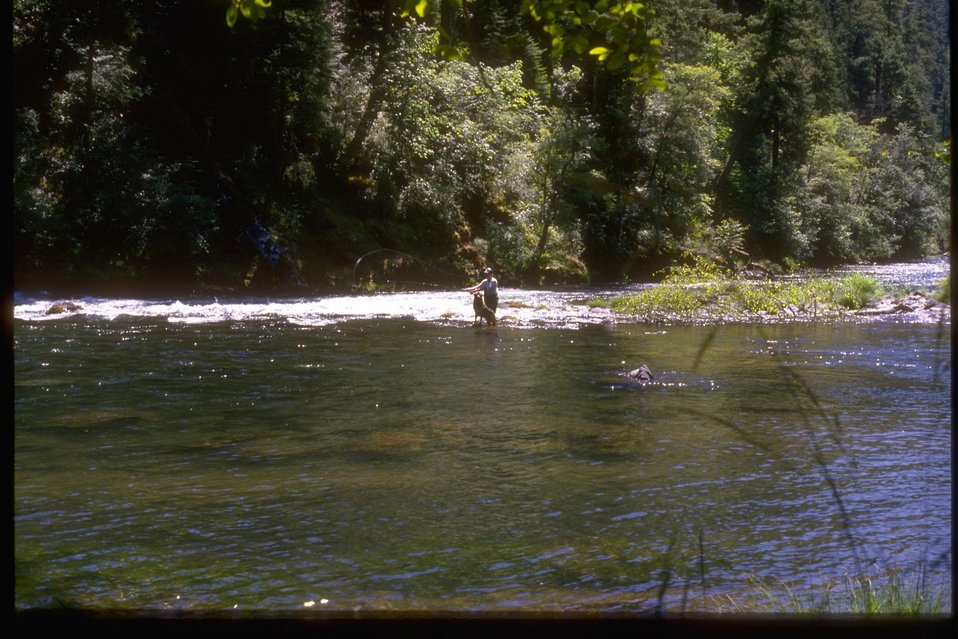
North Umpqua River Series: fisherman.